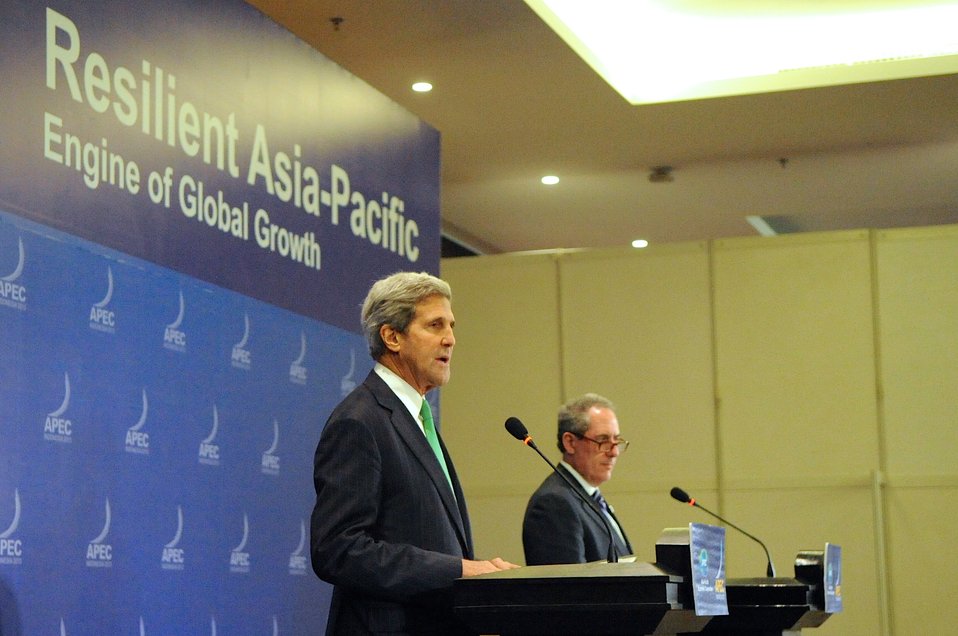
Secretary Kerry and Ambassador Froman Speak to the Press at the APEC Ministerial in Indonesia

U.S. Secretary of State John Kerry and U.S. Trade Representative Ambassador Michael Froman speak with reporters during a news conference after the APEC Ministerial meetings in Bali, Indonesia, October 5, 2013.